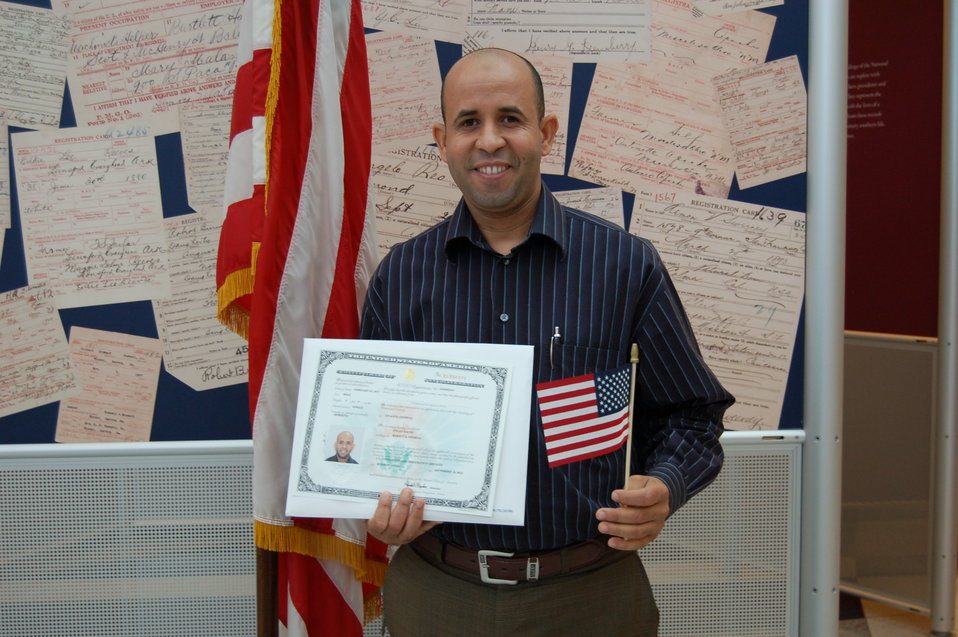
New Citizens